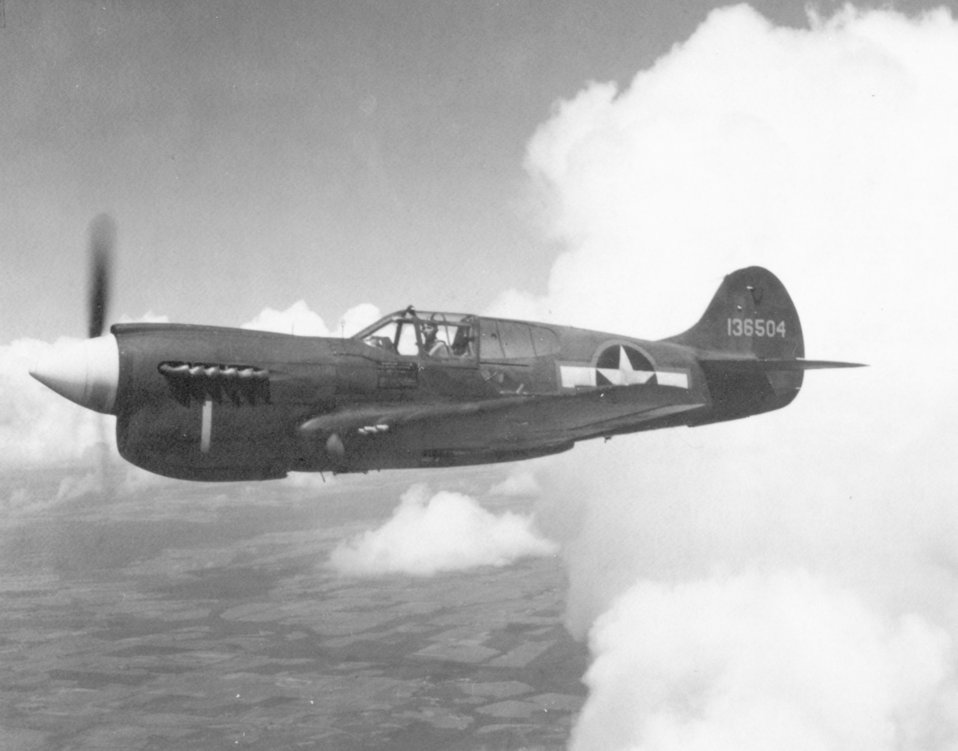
Curtiss P-40E

1940's -- Curtiss P-40E in flight